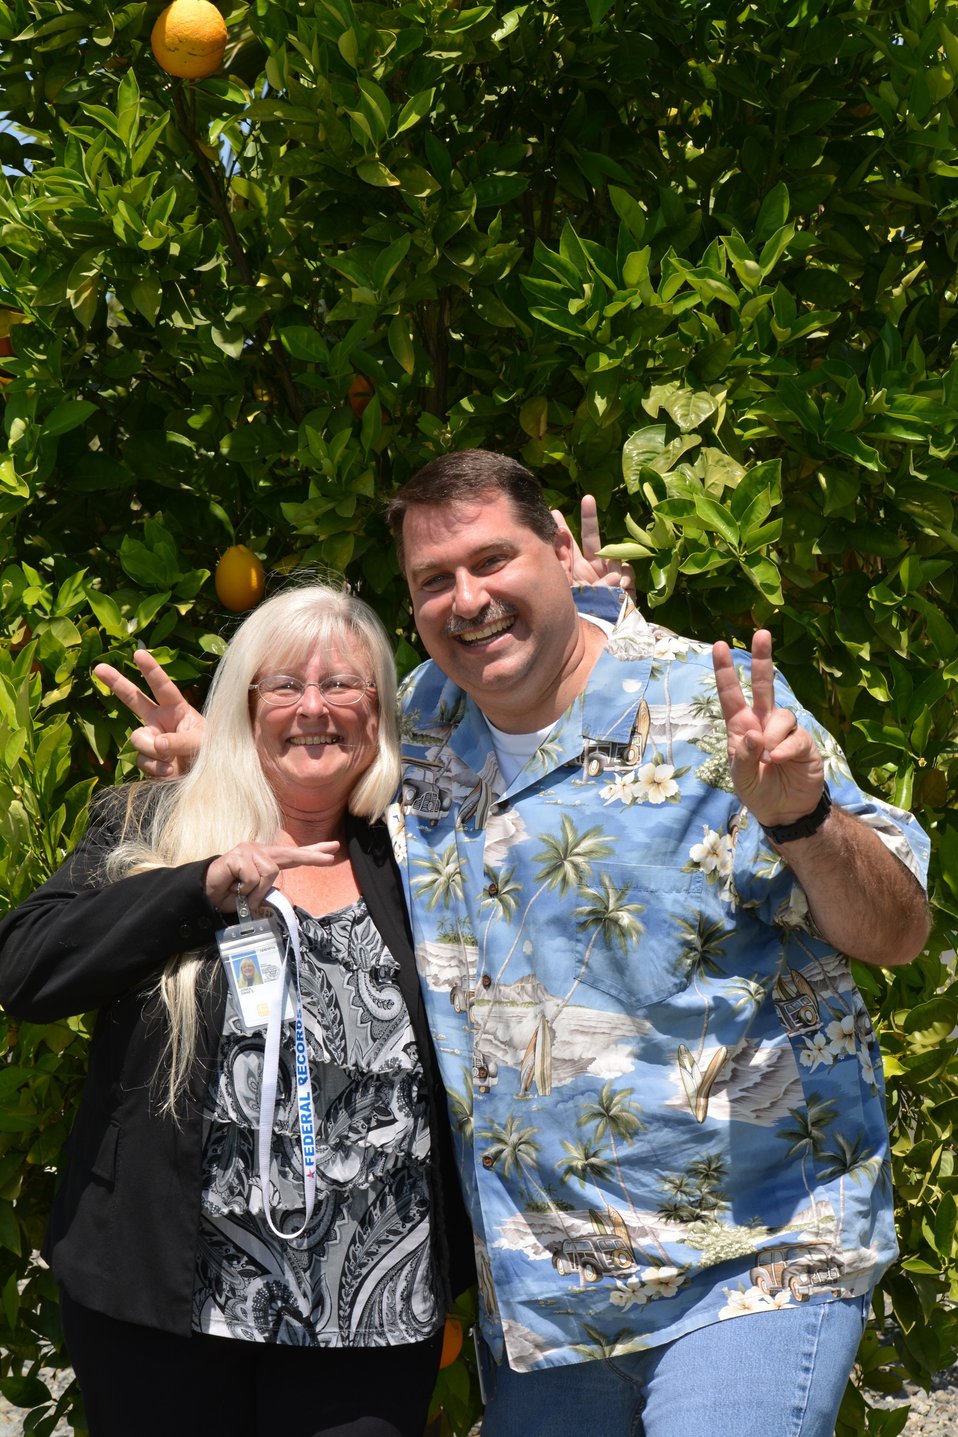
Diane Jones and Mike Kretch have fun following a serious photo shoot.; Location: Riverside Federal Records Center, Perris, CA